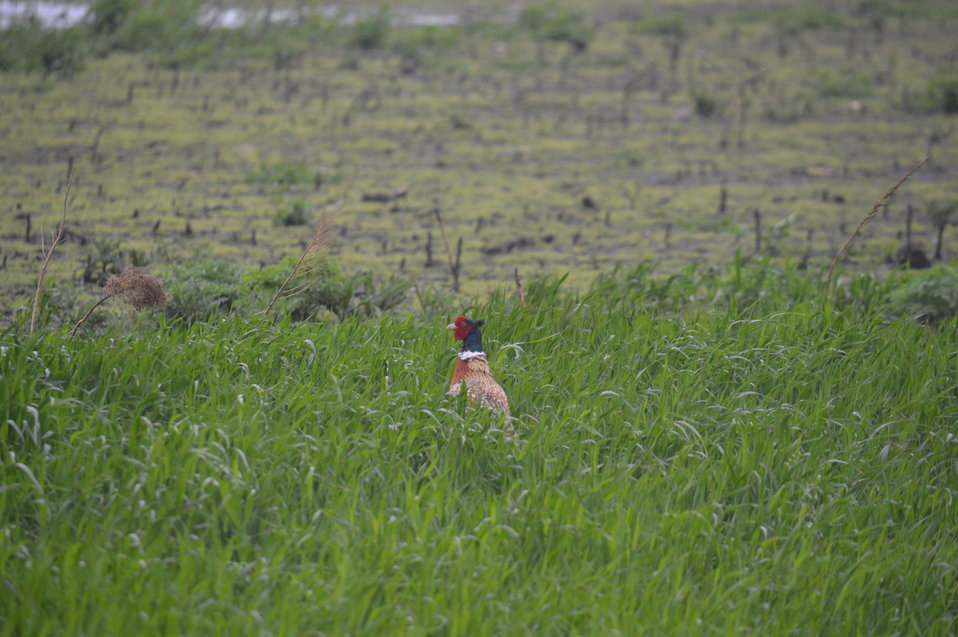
Ring-necked pheasant

Scenery and wildlife and Audubon National Wildlife Refuge in North Dakota.